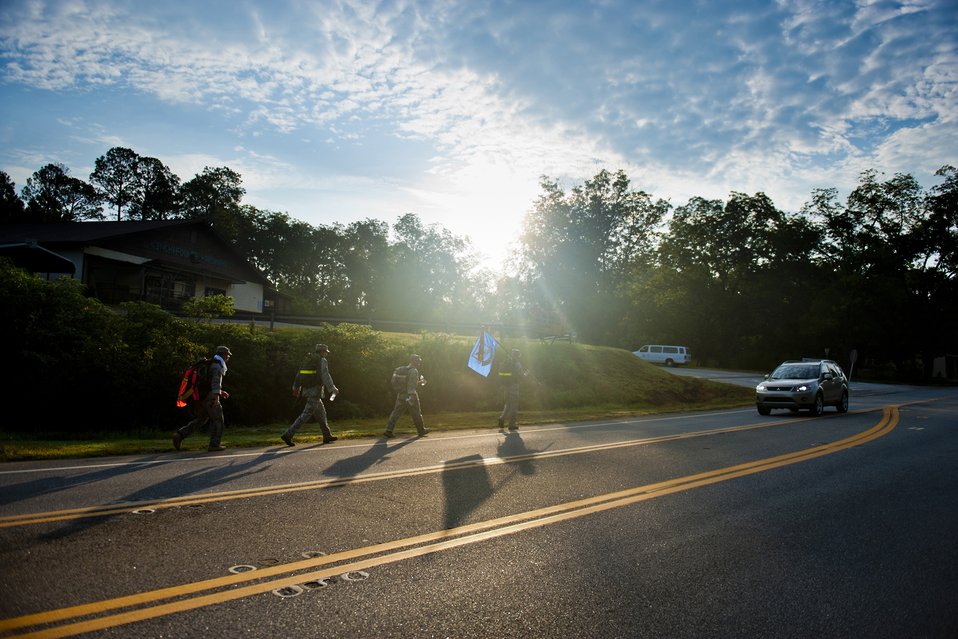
Marching Through Town

Members of the 23rd Security Forces Squadron and 336th Recruiting Squadron, from Moody Air Force Base, Ga., make their way down Highway 280 Aug. 9, 2011, near Preston, Ga. during their portion of the Ruck March to Remember. The 181-mile march began July 12 at the Security Forces Center at Lackland Air Force Base, Texas, and will end Sept. 11 at Ground Zero in New York City to coincide with the 10-year anniversary of 9/11.